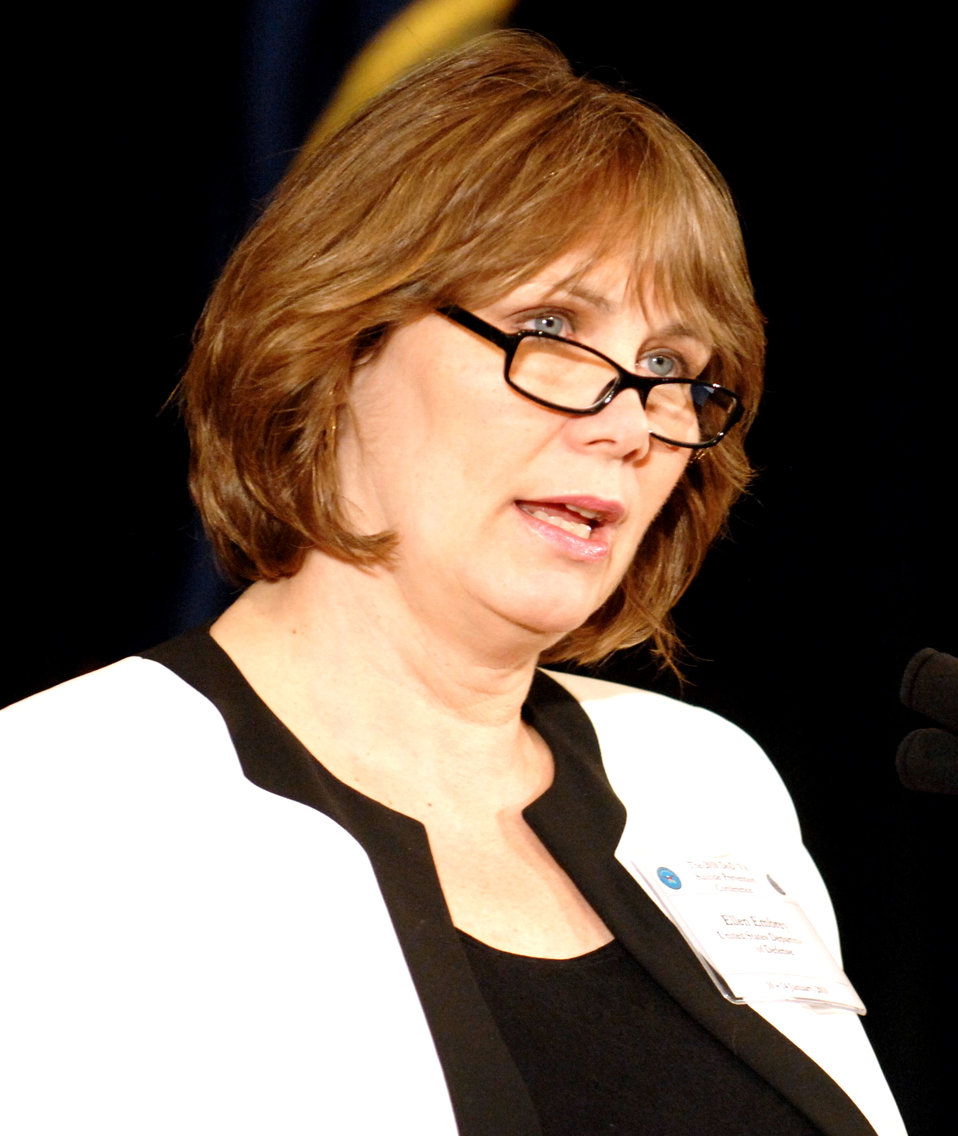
DOD-VA Suicide Prevention Conference

Ellen P. Embrey, assistant secretary of defense for health affairs, speaks at the 2010 Defense Department-Department of Veterans Affairs Suicide Prevention Conference Jan. 11, 2010, in Washington, D.C. More than 1,000 military and government health-care professionals attended the conference.